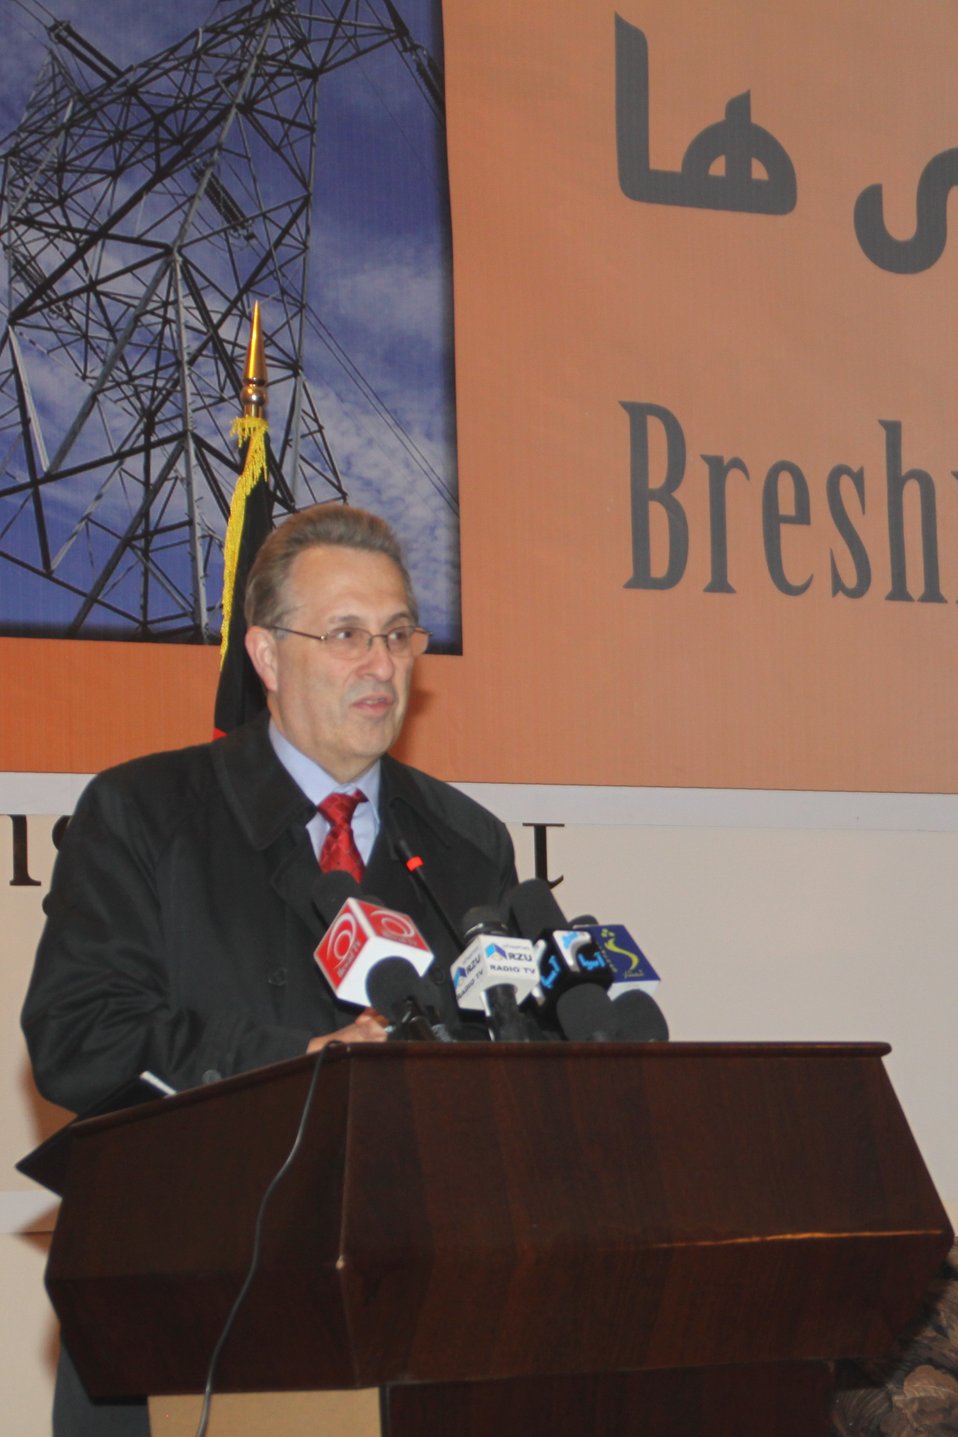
U.S. Ambassador E. Anthony Wayne